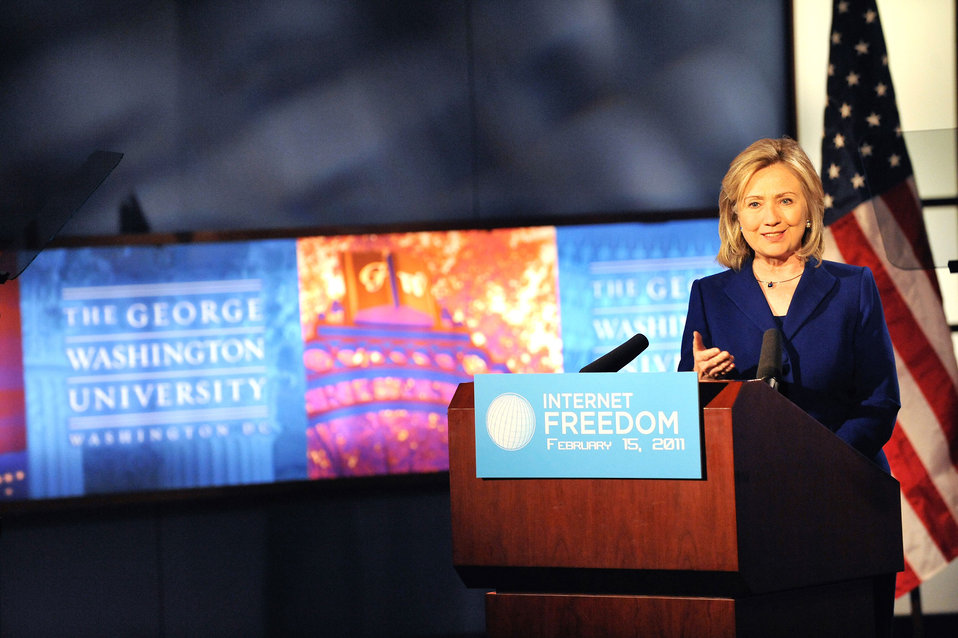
Secretary Clinton Delivers Remarks on Internet Freedom

U.S. Secretary of State Hillary Rodham Clinton delivers remarks on “Internet Rights and Wrongs: Choices and Challenges in A Networked World” at George Washington University in Washington, D.C., on February 15, 2011.